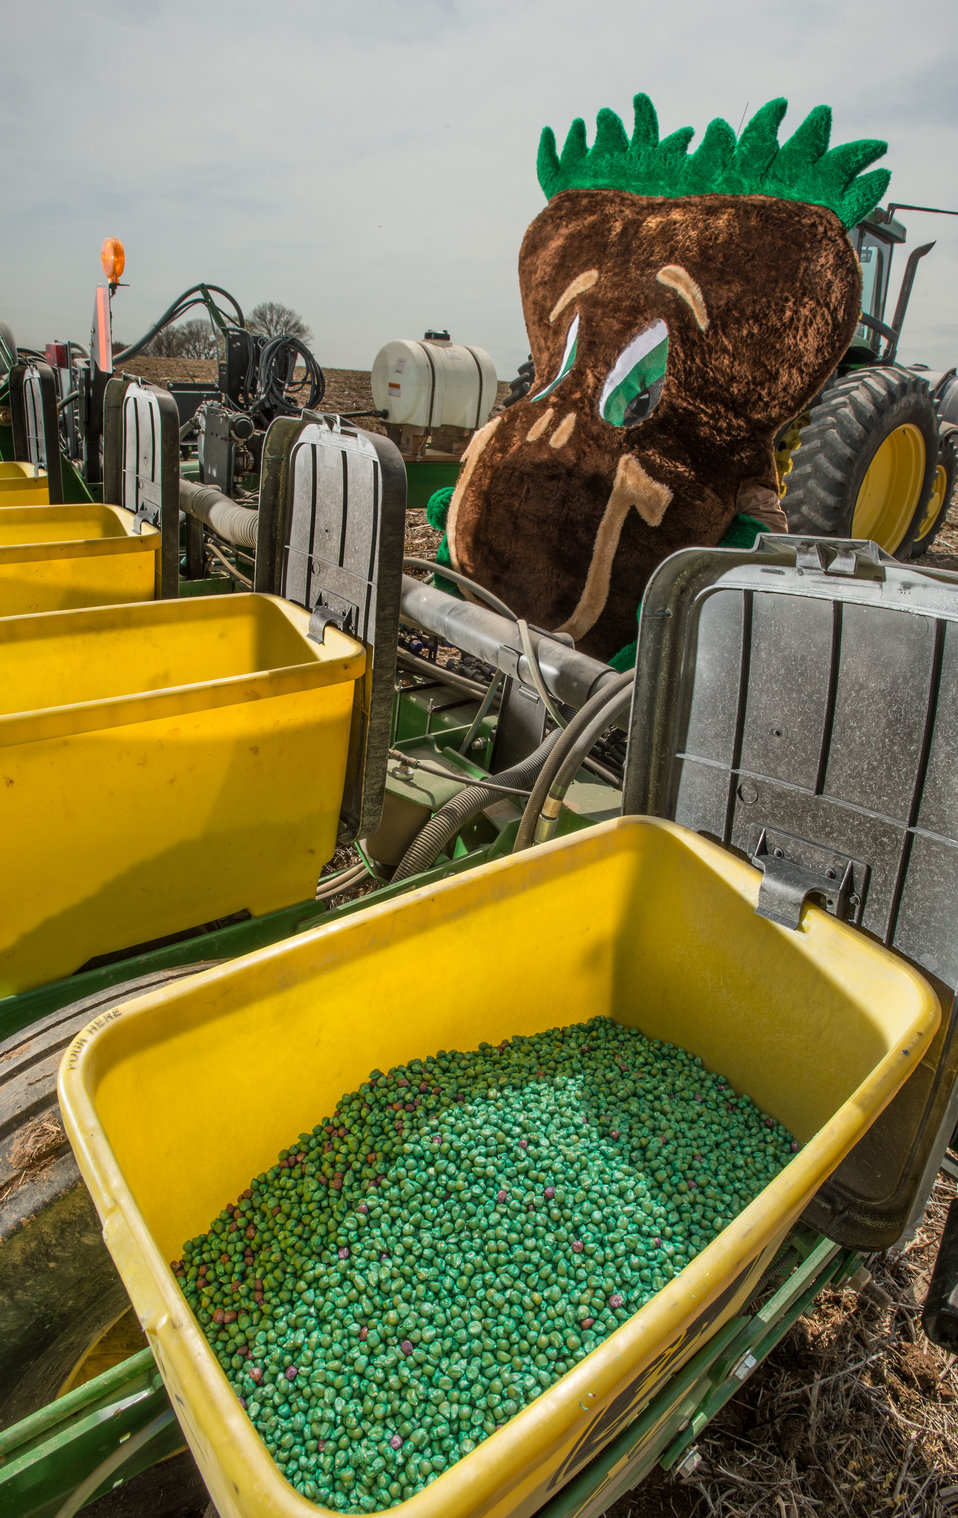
The U.S. Department of Agriculture’s (USDA) Natural Resources Conservation Service (NRCS) mascot Sammy Soil on the Sunny Ridge Farm in Laytonsville, MD on Monday, Apr. 28, 2014. The Sunny Ridge Farm owned by the Stabler family uses a number of conservation practices to promote soil health and water quality. No-till cropping systems use cover crops that help water soak deep into the soil and machines work lightly on top of the soil preserving vertical pores that are water’s pipeline to the roots. Cover crops prevent erosion, improve soil health, hold water, supply nutrients, and suppress weeds and pests. Fenced waterways keep livestock away from the streams and drainage to low points of fields, which allows grass, trees and other vegetation to grow. The plants take up nutrients from the livestock effluent, reducing pollution to waterways. The farm also has a well-designed agrichemical facility for an environmentally safe area to handle and store tanks of on-farm chemicals.